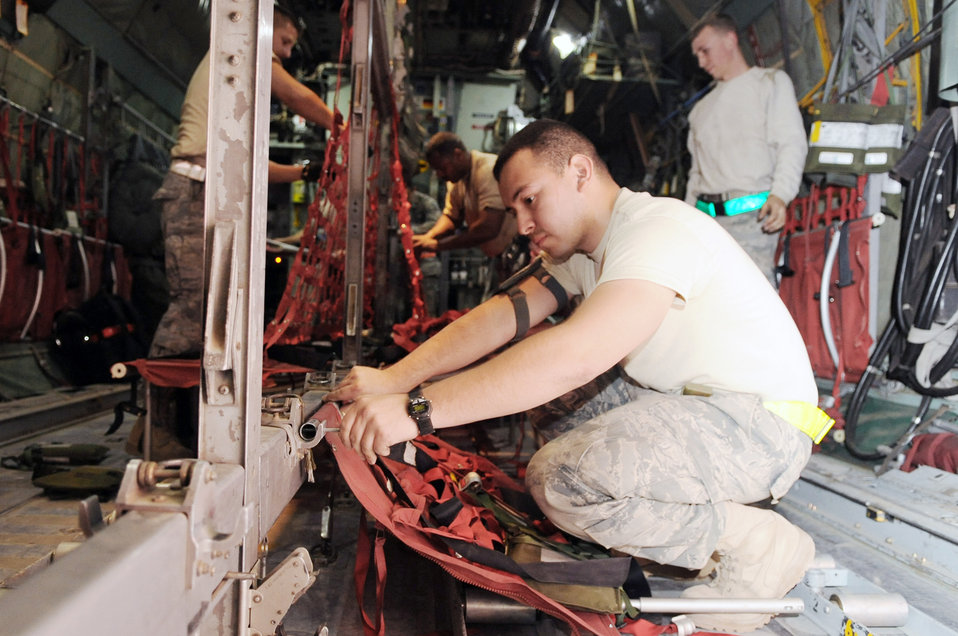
C-130E completes last combat mission

Airmen from the 777th Expeditionary Aircraft Maintenance Unit put seats in a C-130E Hercules to prepare for its last combat mission March 6, 2010, at Joint Base Balad, Iraq.